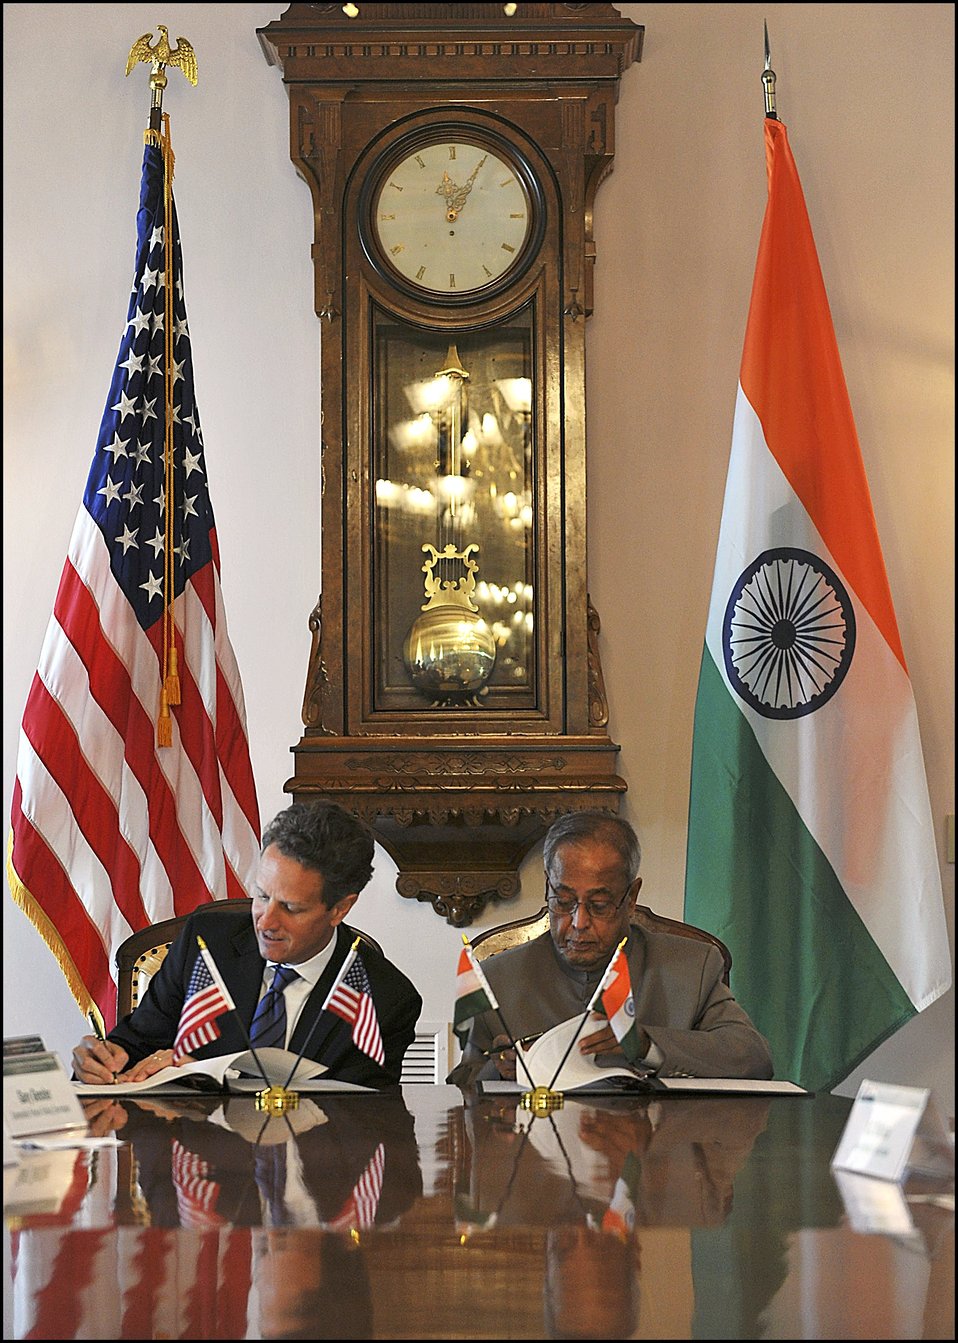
2011 U.S.-India Partnership

Treasury Secretary Tim Geithner and Indian Finance Minister Pranab Mukherjee sign the joint statement which said: 'Building on the success of the first year of the Partnership, we will continue to strengthen our economic and financial partnership in order to realize the full economic and strategic potential of the U.S.-India partnership to achieve maximum benefits for Americans and Indians.'